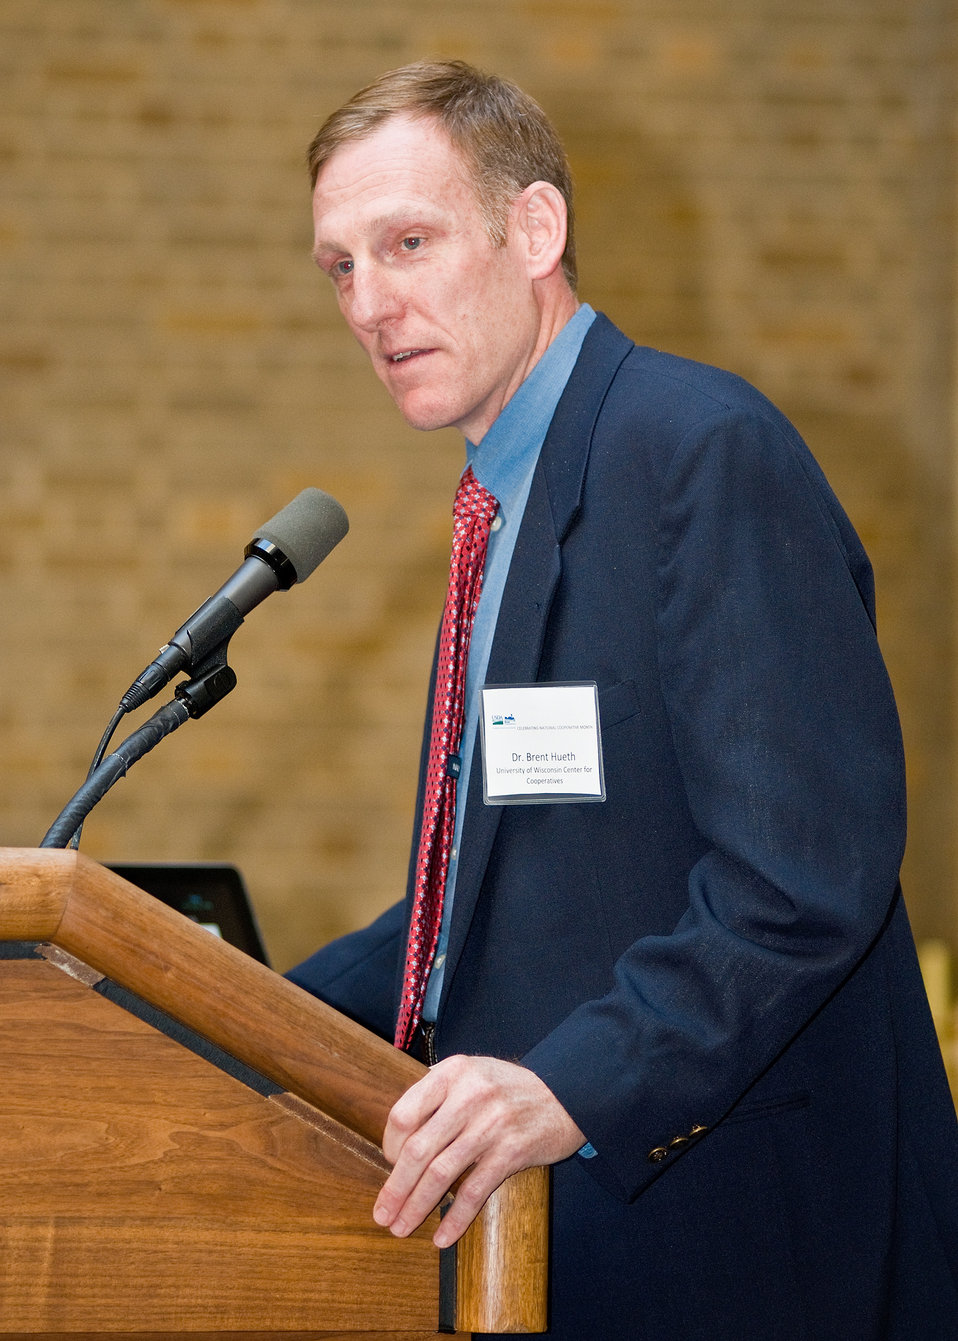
Dr. Brent Heuth, Director, University of Wisconsin Center for Cooperatives speaks of the demographics and economics of rural cooperatives and their importance to rural economies during the celebration of October as National Co-op Month at an event at the Department of Agriculture, Tuesday, October 5, 2010 in Washington, DC. USDA Photo 10di1517-35 by Bob Nichols.